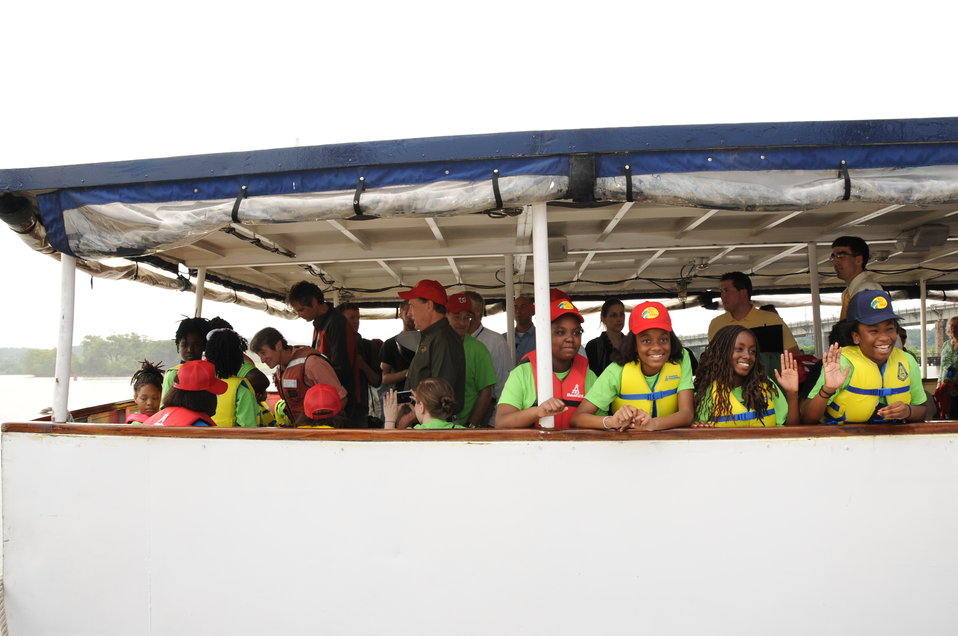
2013 National Fishing and Boating Week

Local students prepare to enjoy fishing at the annual kick-off of National Fishing and Boating Week on the Anacostia River in Washington D.C.